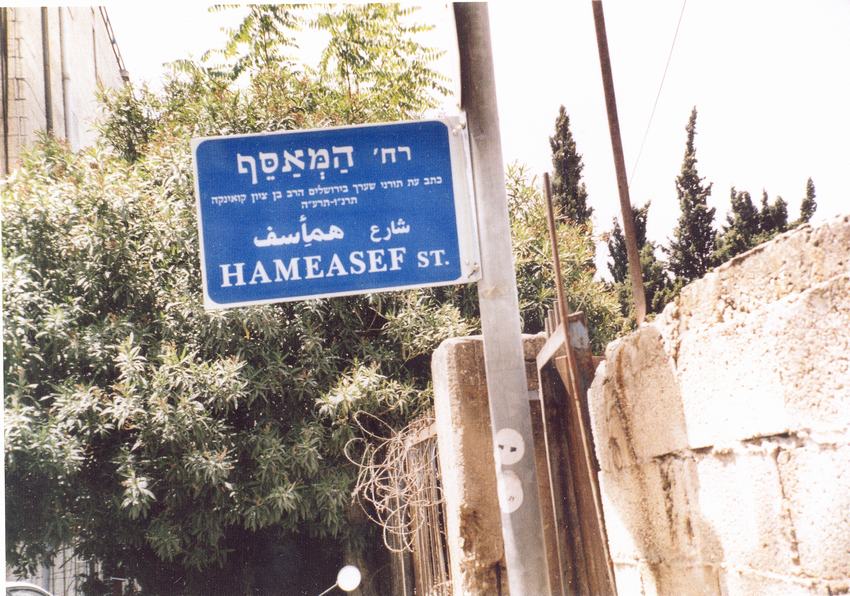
Français : Jérusalem ouest - Quartier Romema - rue 'HaMeasef' עברית: רחוב ע'ש כתב העת התורני 'ה×�×�סף' בעריכתו של הרב בן ציון ×�ברה×� קו×�ינקה בירושלי×�